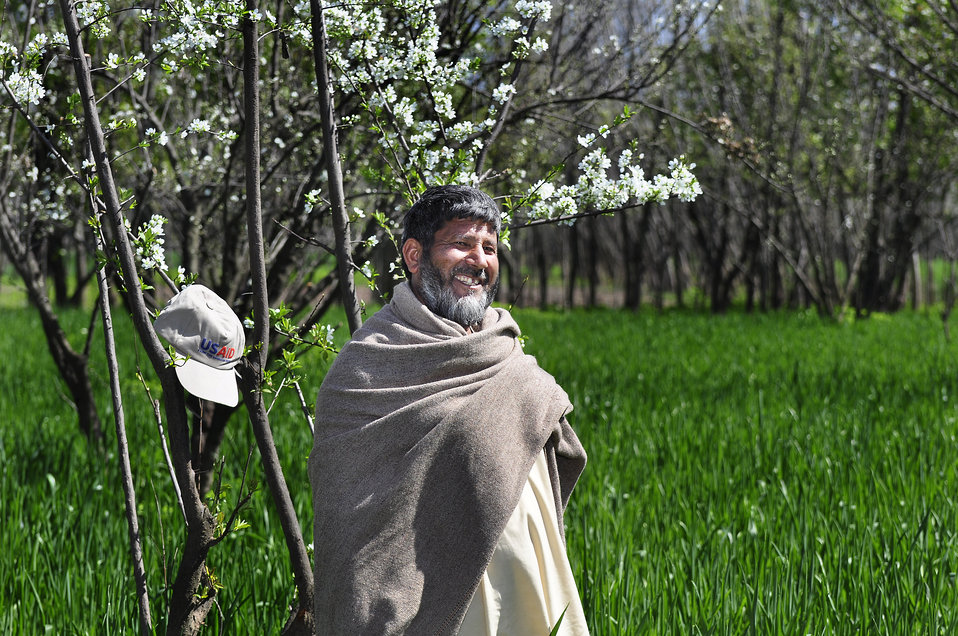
2011 March: USAID's Agricultural Recovery Program in 22 districts of Khyber Pakhtunkhwa, Punjab and Balochistan is an excellent example of the impact US development assistance can have. We have helped more than 500,000 farmers salvage the winter planting season and livestock after the floods. As a result, wheat farmers have nearly doubled their harvests. More than 5 million people have benefited. These photos show progress of the USAID Agricultural Recovery Project in Khyber Pakhtunkhwa.